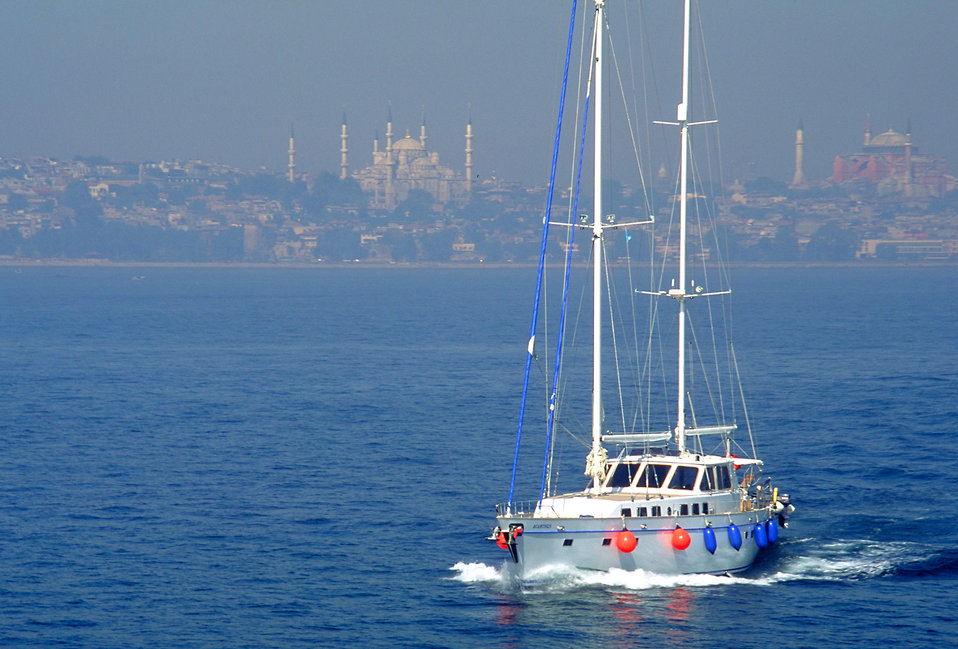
This 1993 photograph depicted a view of Istanbul, Turkey, from the Bosphorus, which is the winding strait that separates Europe from Asia. The Bosphorus is its own tourist destination with a mixture of modern hotels, and stone fortresses, as well as fishing villages. Istanbul, as can be seen from the photo, has air pollution problems similar to many of the world's largest cities, and is increasingly becoming a business destination, as well as a place for tourists. It is important for all travelers to be aware of the potential health hazards of travel to any destination, foreign or domestic.